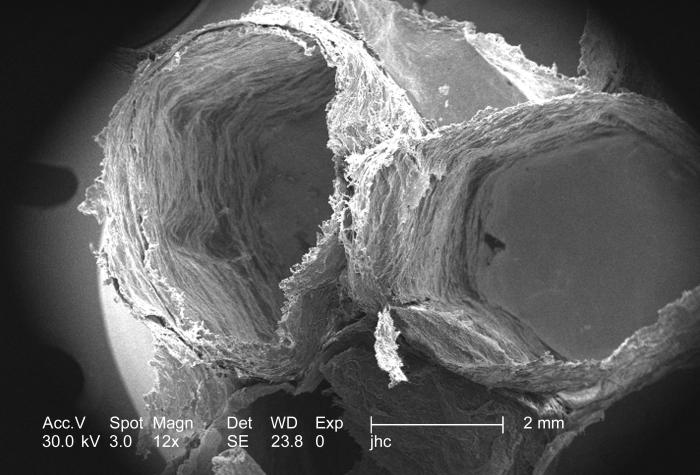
At a very low magnification of only 12x this scanning electron micrograph (SEM) depicted some of the ultrastructural details made visible of the surface of an unidentified wasps' nest found on the ground in the Decatur, Georgia suburbs. Note what appears to be a lamellated, or layered pattern, which was used by the nest builders in the construction of the hexagonally-shaped cells.